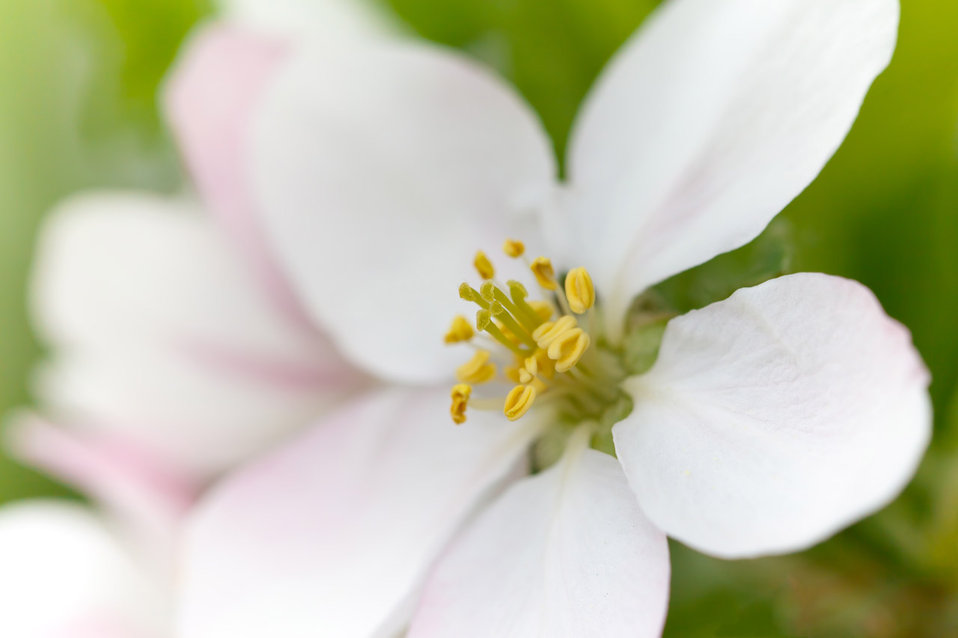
Apple tree blossom

Macro photo of an apple tree blossom.